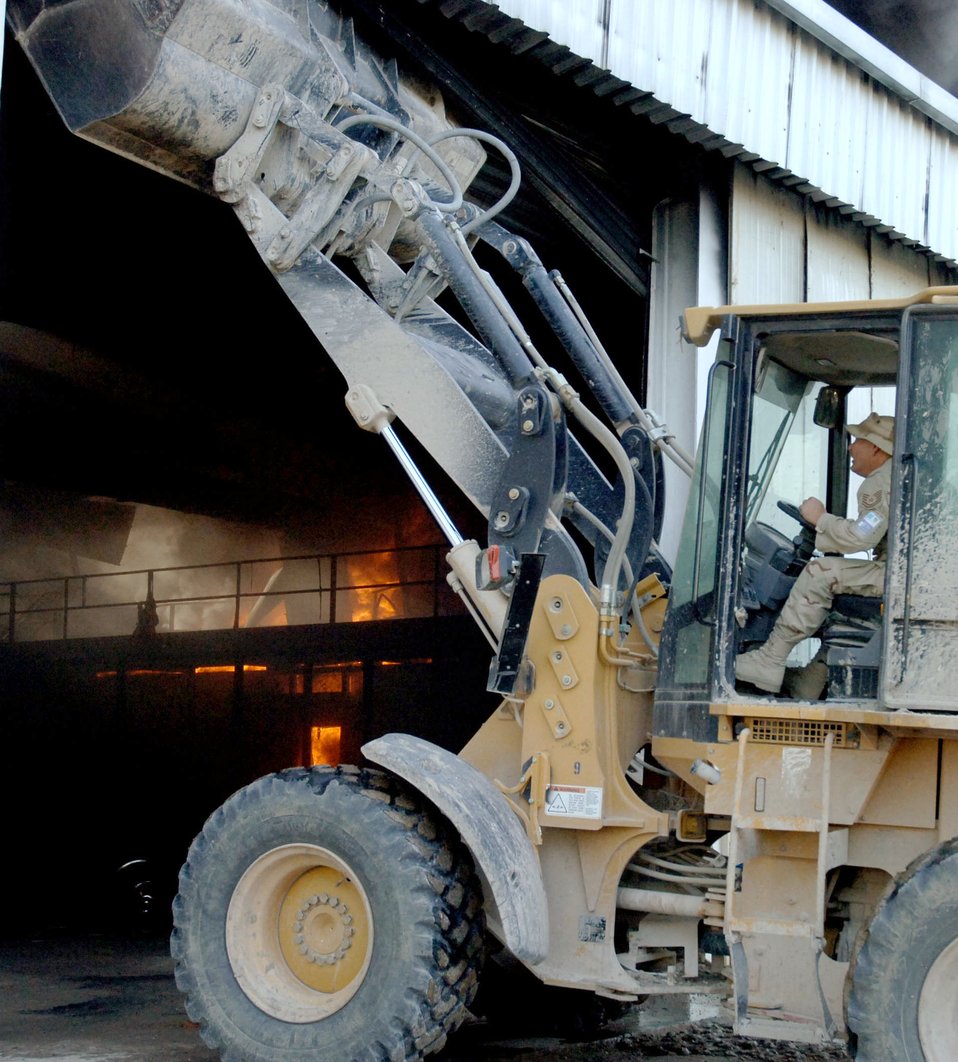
Five-alarm blaze

Tech. Sgt. Christopher Stokes tears down a garage door to allow firefighters to battle a blaze at an indoor weapons training range at Victory Base Complex, Iraq, March 11. Iraqi and American firefighters from five fire stations battled the blaze, which destroyed half of the facility. He is with the 447th Expeditionary Civil Engineer Squadron.